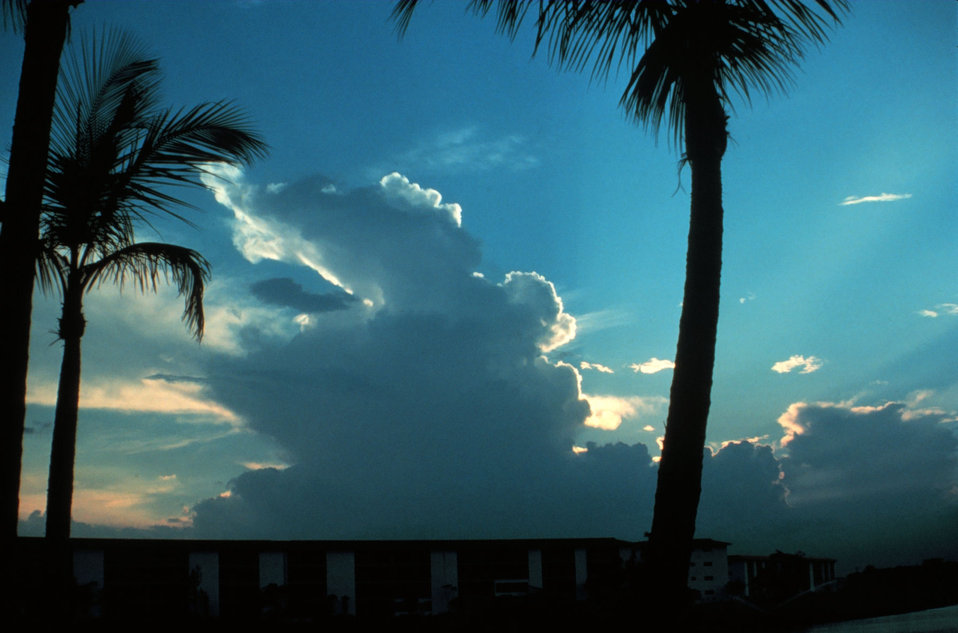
Towering cumulus